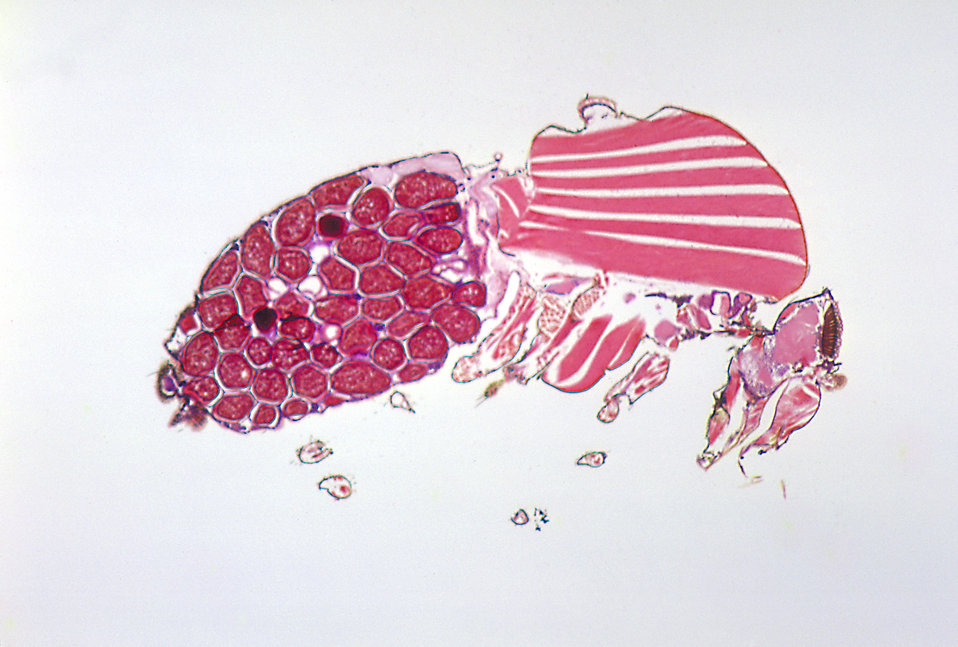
A photomicrograph revealing the histology of Onchocerca volvulus developing in a Black Fly, Simulium ochraceum.